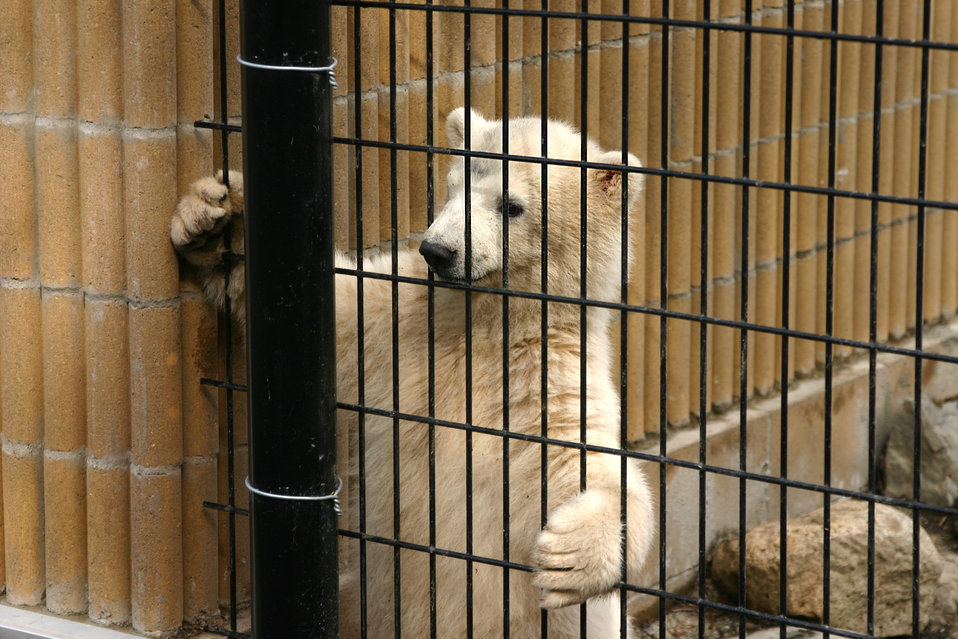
Kali peering out 02

Kali at the Alaska Zoo.